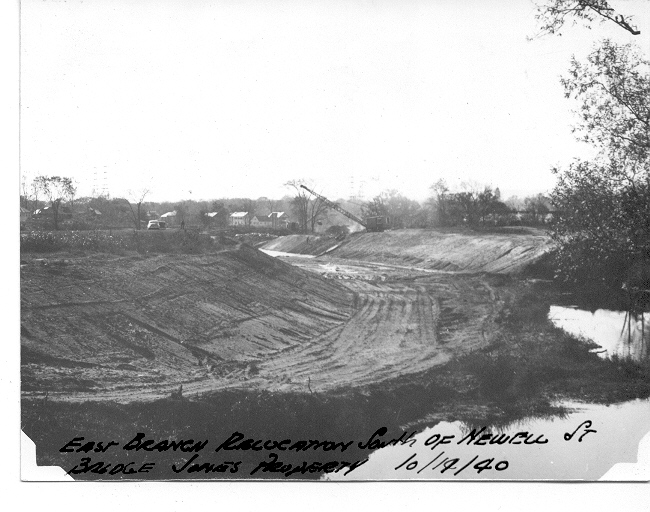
(Historical photo) October 14, 1940 Housatonic East Branch 'Relocation'

This historical photo captures the original disruption of the river's natural path in the East Branch south of Newell Street in Pittsfield, MA.